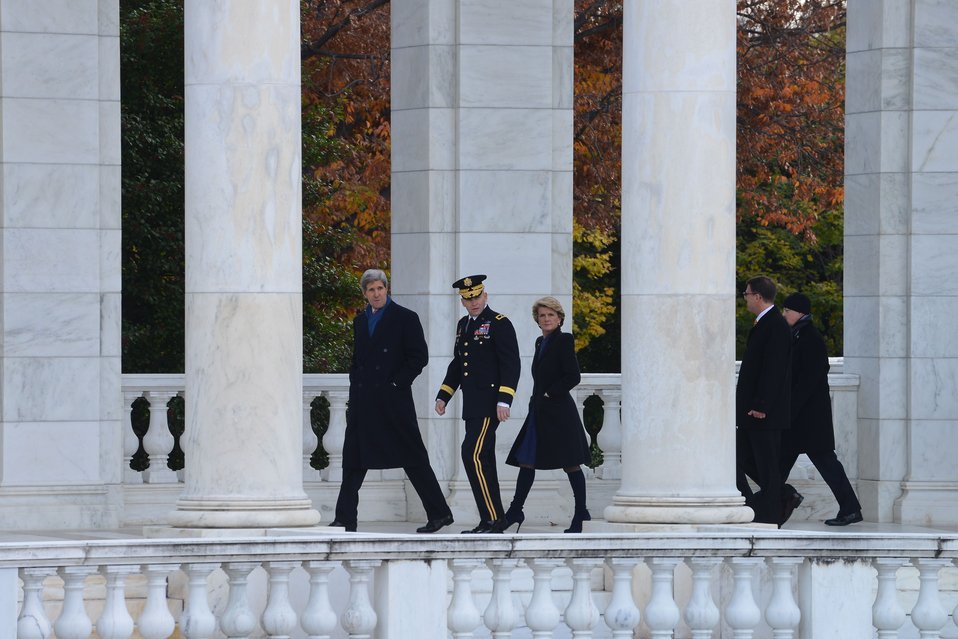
Secretary Kerry and Australian Foreign Minister Bishop Walk to the Tomb of the Unknown Soldier

U.S. Secretary of State John Kerry, U.S. Secretary of Defense Chuck Hagel, Australian Foreign Minister Julie Bishop, and Australian Defence Minister David Johnston walk to the Tomb of Unknown Soldier to participate in a wreath laying ceremony at Arlington National Cemetery in Arlington, Virginia, on November 20, 2013.